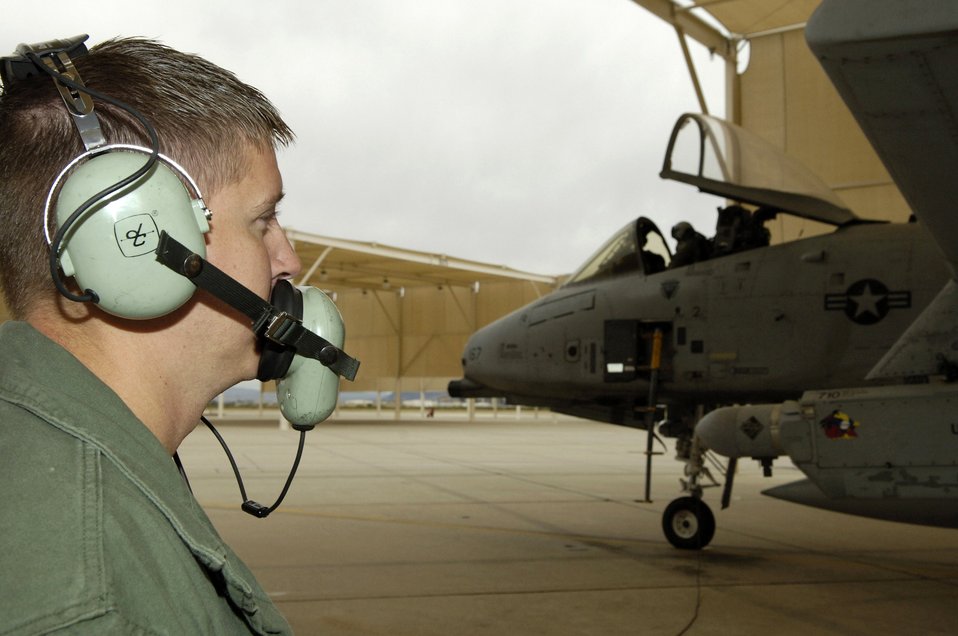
Taking an A-10 from pre-flight to flight

Tech. Sgt. Jerome Westbrook makes a communication check with Capt. Andrew Tenenbaum as the captain prepares to taxi his A-10 Thunderbolt II Oct. 29. Sergeant Westbrook is assigned to the 355th Aircraft Maintenance Squadron and Captain Tenenbaum is a pilot in the 354th Fighter Squadron at Davis-Monthan Air Force Base, Ariz.